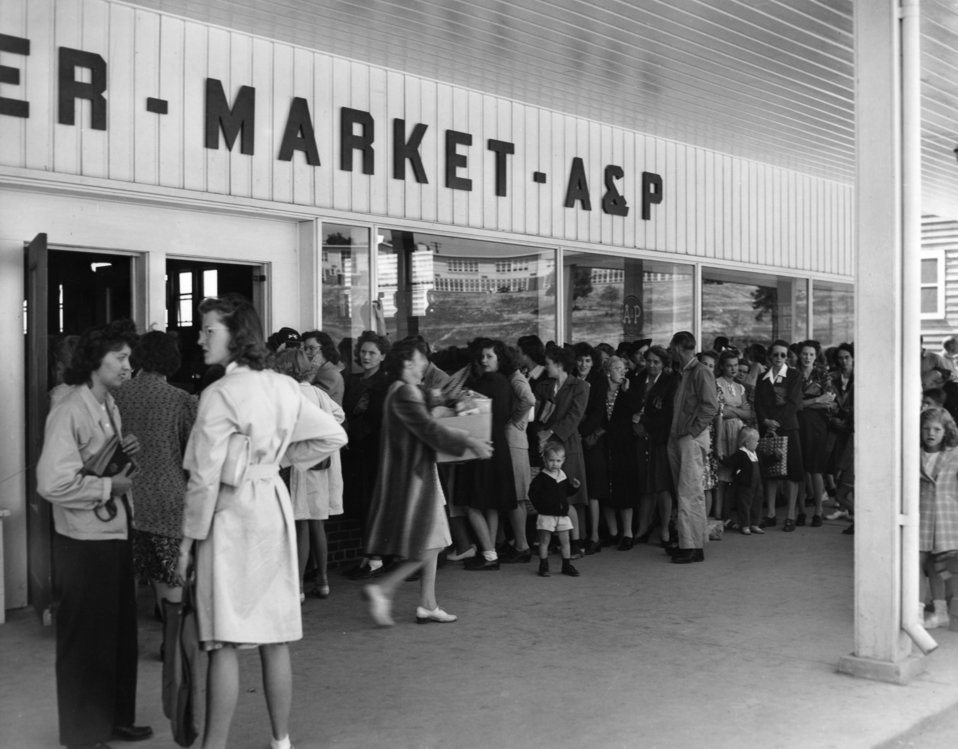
Daily Life at Oak Ridge MARKET